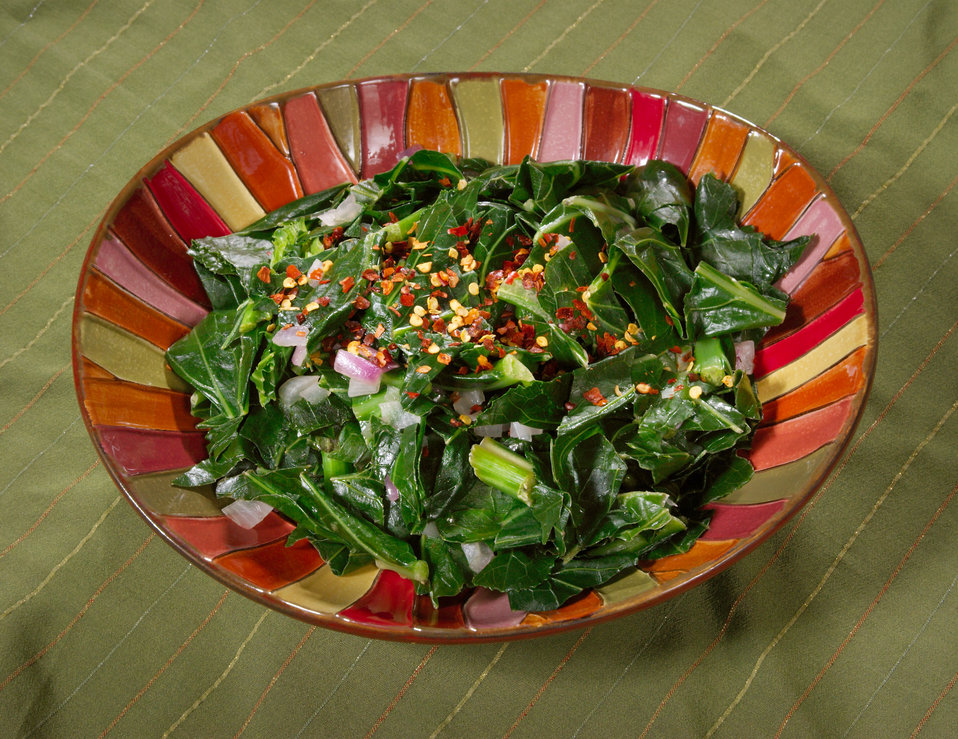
This image depicts a side dish entitled, Soulful Greens. Consisting of collard greens, red onions, garlic, low-sodium chicken broth, orange juice, and dried pepper flakes, this recipe may be accessed using the link below. It's a delicious side dish that's very high in vitamins A and C, dietary fiber, and protein, while being low in sodium and fat.